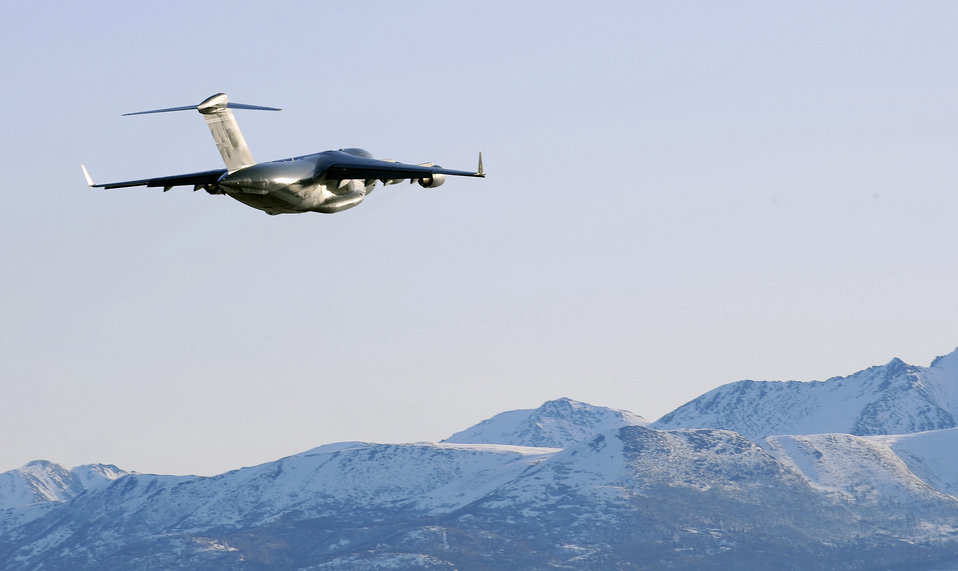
Commander flies C-17

A C-17 Globemaster III takes off from Elmendorf Air Force Base, Alaska, March 26, 2010. Col. Thomas Bergeson, 3rd Wing commander and F-22 Raptor pilot, was behind the controls of the aircraft for the first time.